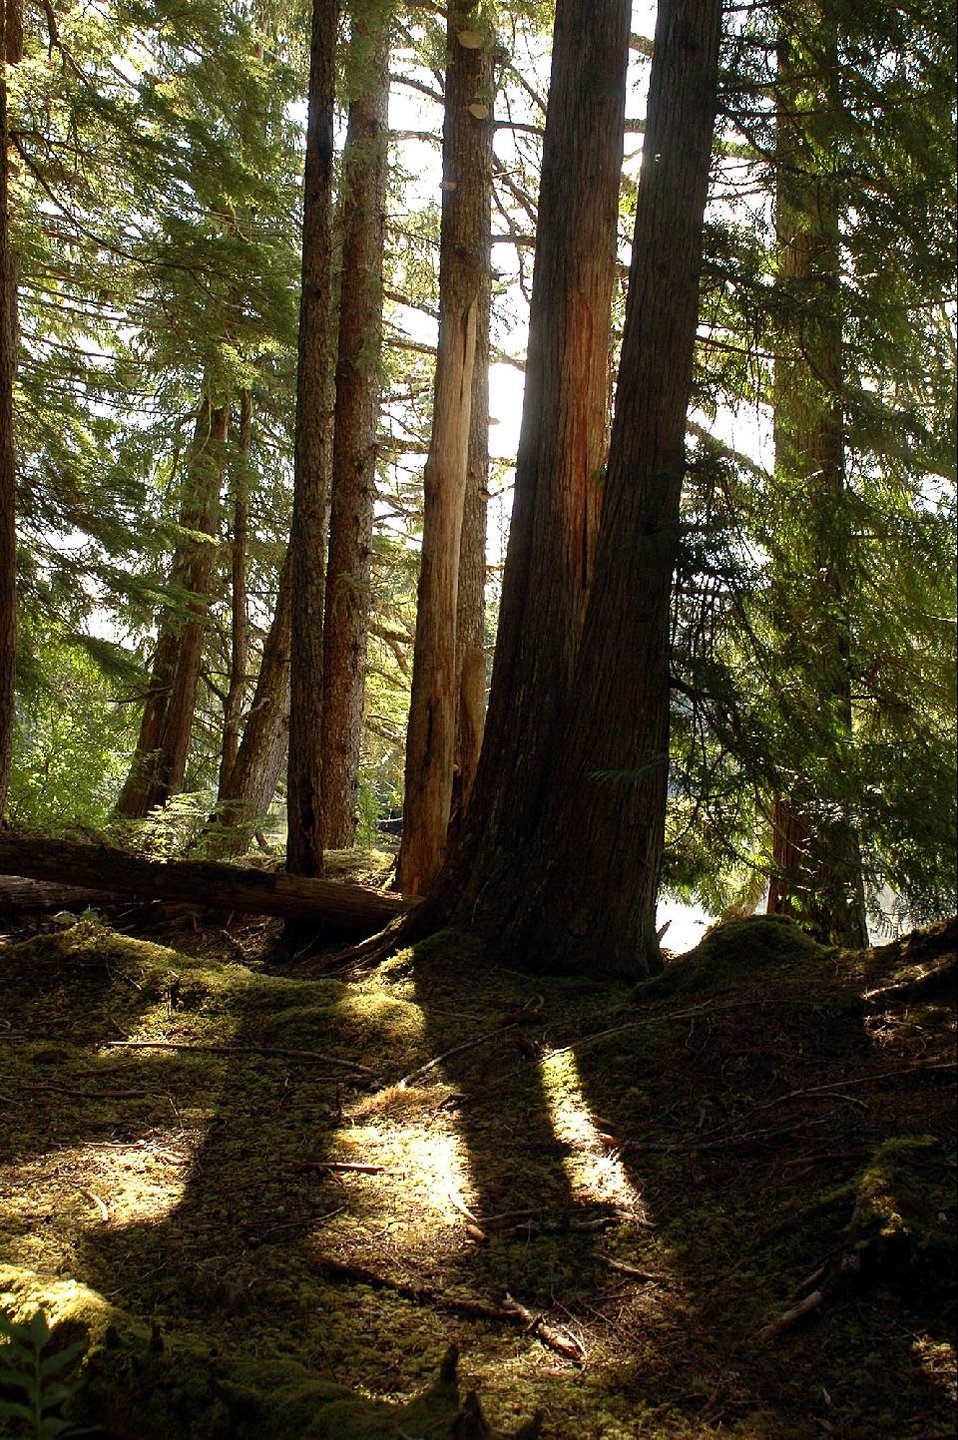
Oldgrowth TongassNF

The sun streaks into the dense forest, shadowing and illuminating an old growth stand on the Tongass National Forest, the largest in the US Forest Service system of managed public lands.